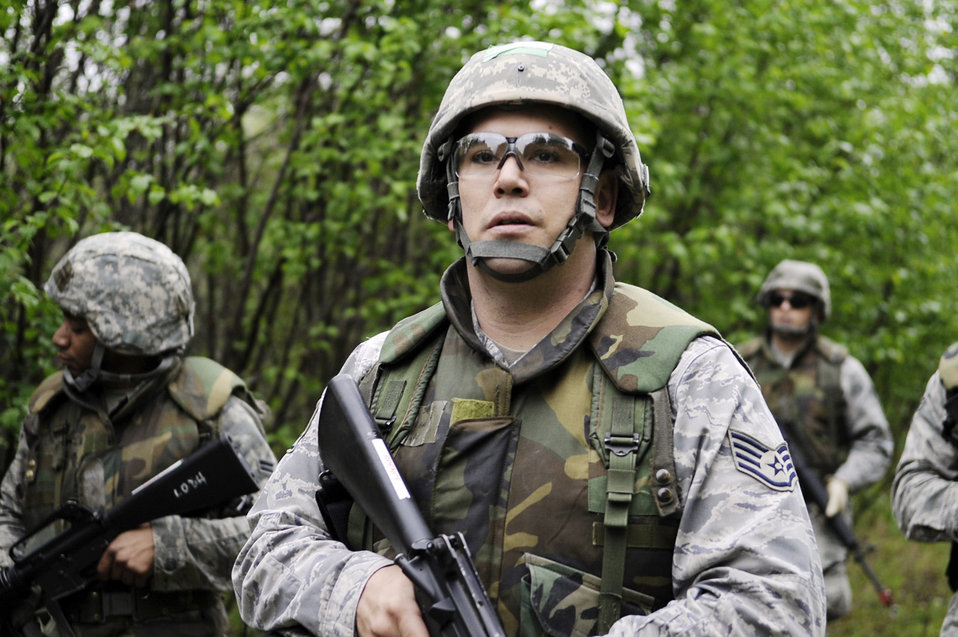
Dismounted patrol preparedness exercise

Staff Sgt. Esequiel King leads the way June 2, 2011, during a dismounted patrol preparedness exercise at Eielson Air Force Base, Alaska. Sergeant King is assigned to the 354th Civil Engineer Squadron.